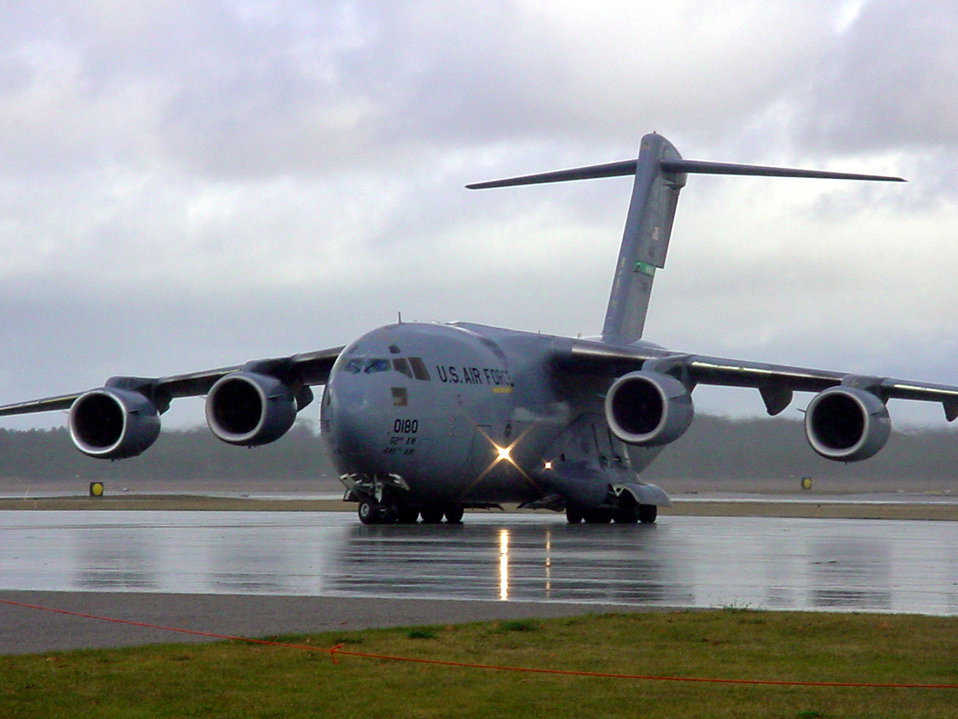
On the go

ALPENA, Mich. -- A C-17 Globemaster III taxi's during Crisis Look 2004, an exercise at the Alpena Combat Readiness Training Center here Oct. 16. The aircraft is assigned to the 62nd Airlift Wing at McChord Air Force Base, Wash.